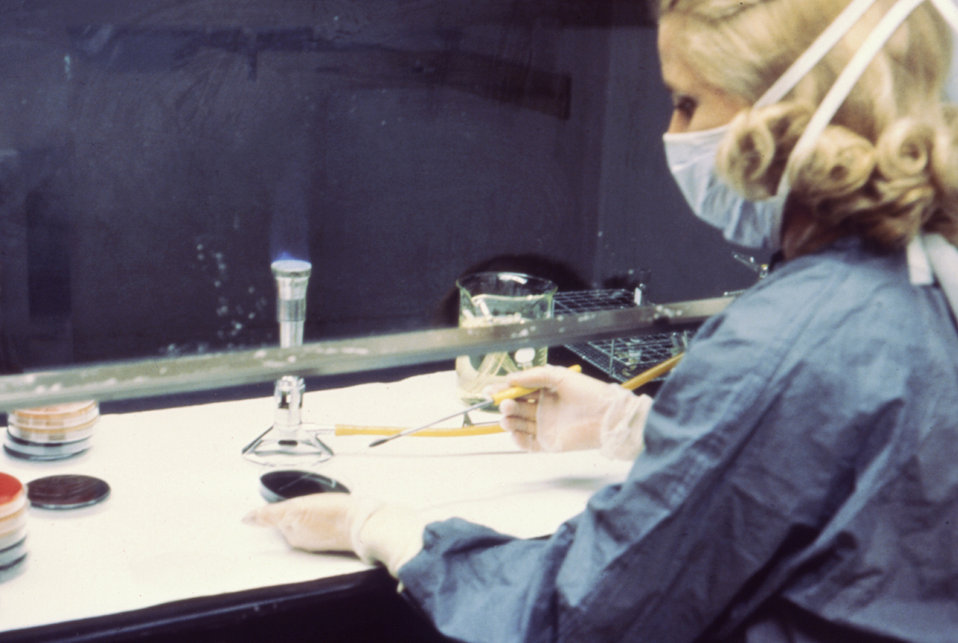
This microbiologist is inoculating charcoal yeast extract agar with a specimen suspected of containing Legionella spp..